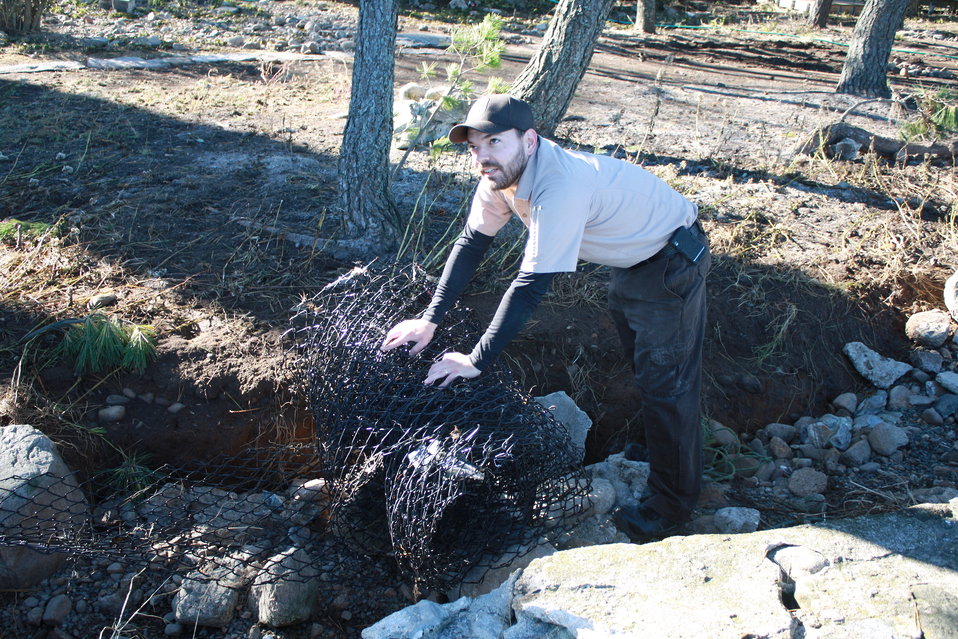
Beginning repairs at Stewart B. McKinney National Wildlife Refuge (CT)

Visitor Services Manager Shaun Roche clears a fallen fence on Outer Island after Hurricane Sandy.